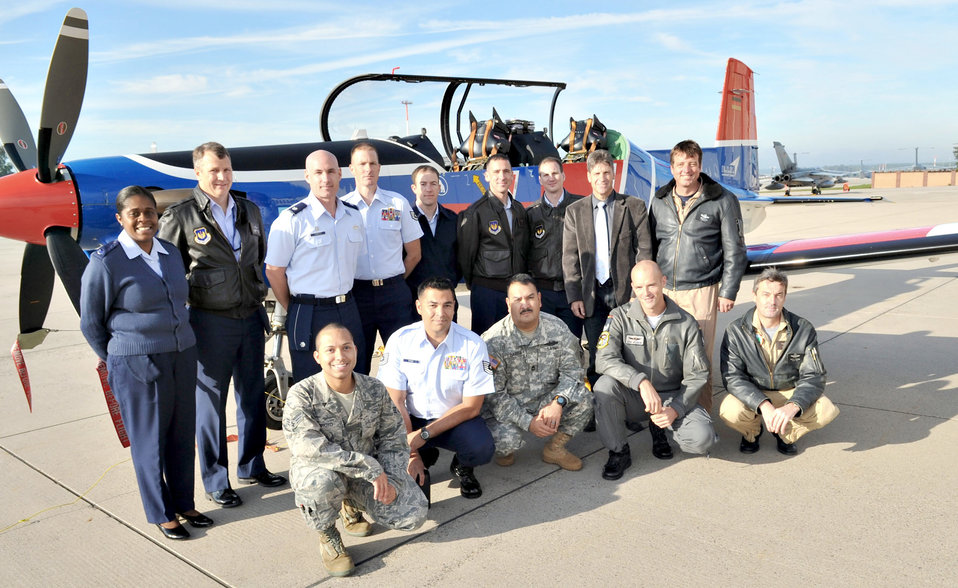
German partnership

Members of the Air Ground Operation Squadron pose in front of a Pilatus PC-9 aircraft Sept. 20, 2010, at Ramstein Air Base, Germany. The PC-9 is one of ten aircraft owned by a local German company that has been awarded a one-year contract to fly the PC-9, which is capable of doing nearly everything joint terminal attack controller instructors need for training certification.